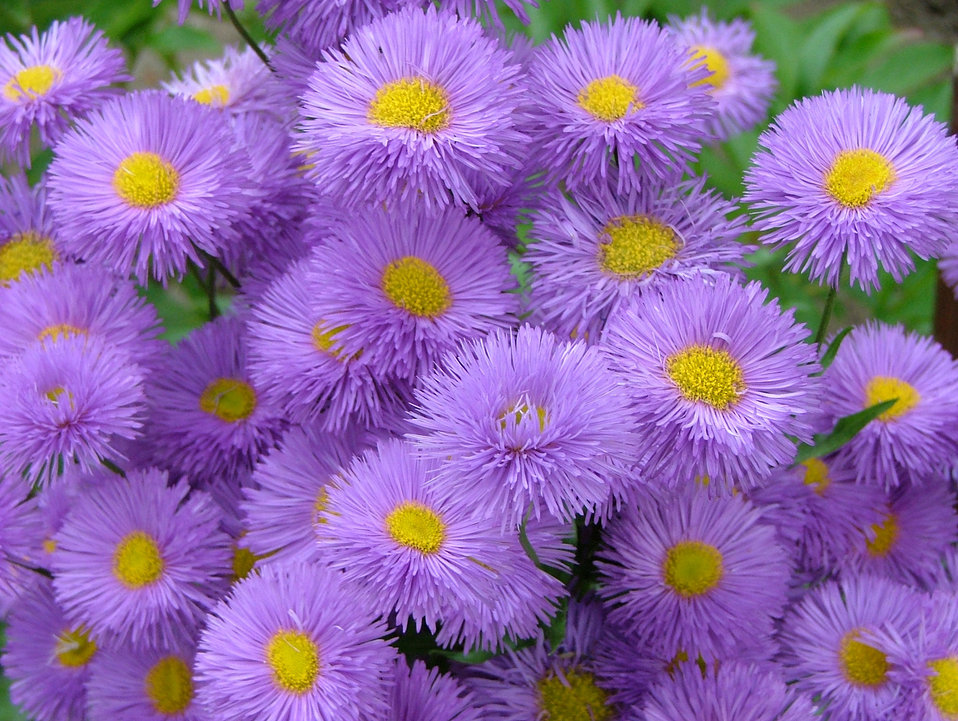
Flowers

Purple flowers in the meadow.